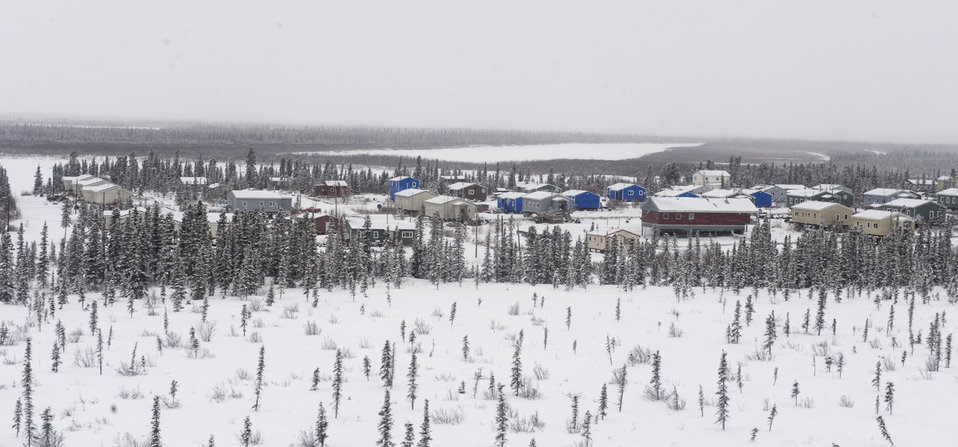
Operation Arctic Care

Medical teams are deployed to the remote village Noorvik, Alaska, supporting Operation Arctic Care, a joint medical training exercise comprising Air Force, Army and Navy elements including Guard, Reserve and active duty components.